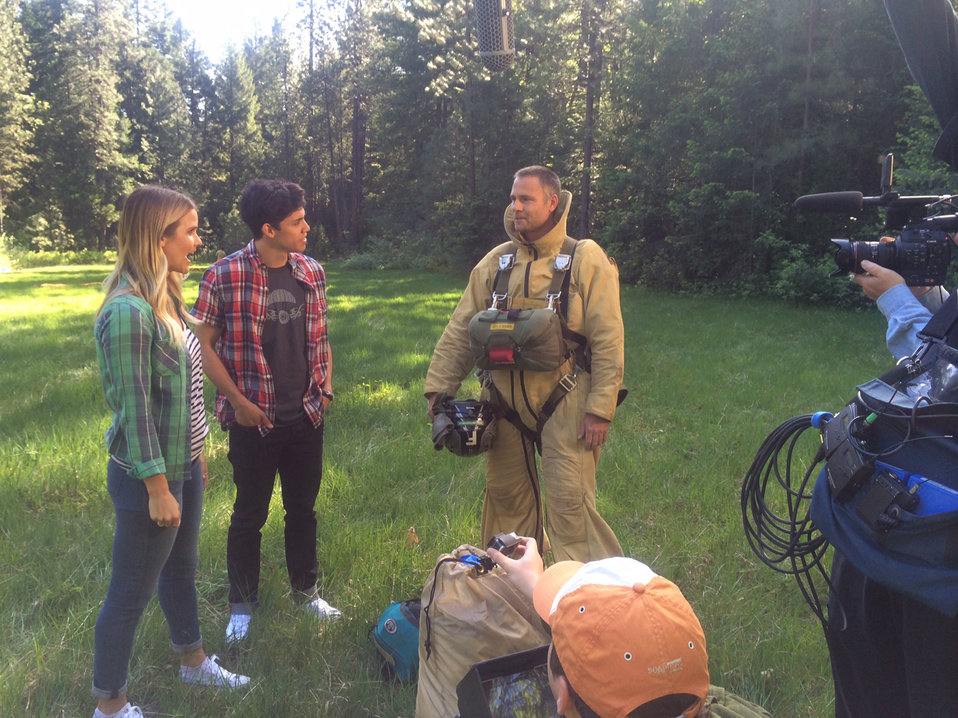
Planes Fashano

U.S. Forest Service smokejumper Greg Fashano talks with Disney Channel’s “Movie Surfers” Taryn Brooks and Golan Yosef after landing in a small meadow at Slate Creek on the Shasta Trinity National Forest in California.